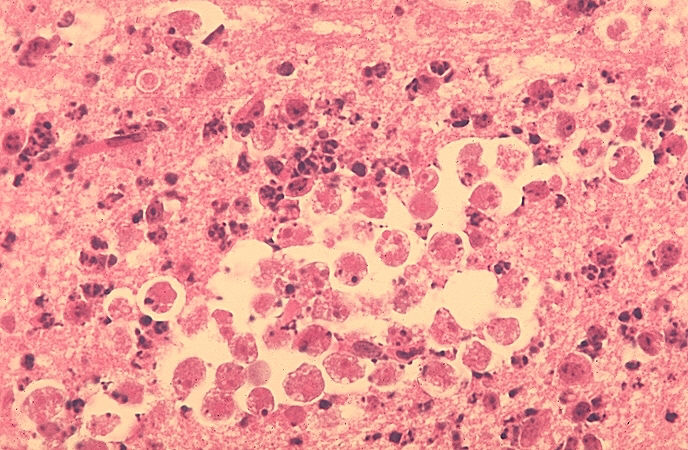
Histopathology of Naegleria gruberi experimental meningoencephalitis. Parasite, ameba, brain.